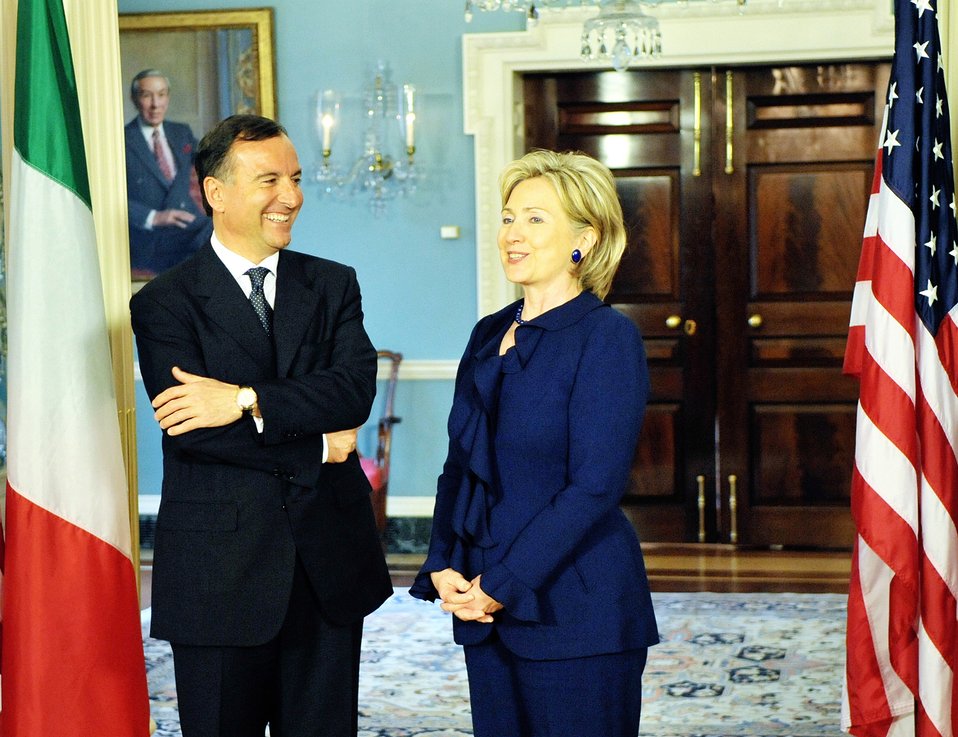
Secretary Clinton Meets With Italian Foreign Minister

U.S. Secretary of State Hillary Rodham Clinton hosts a bilateral meeting with Italian Foreign Minister Franco Frattini in the Treaty Room of the U.S. Department of State in Washington, DC May 7, 2009.